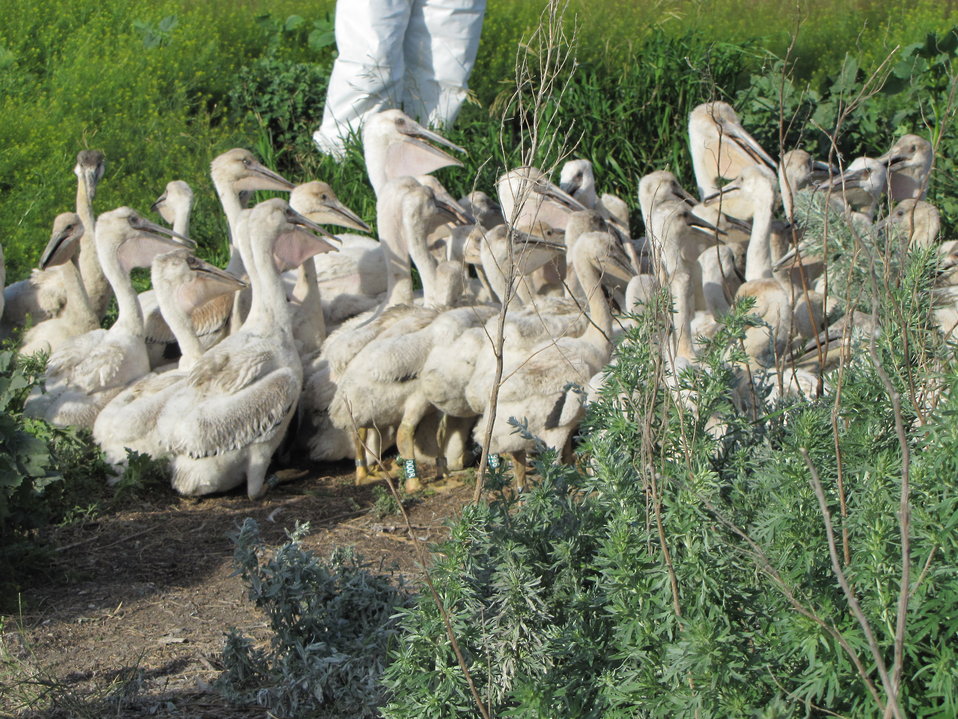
Group of young pelicans

Young pelican group together in pods or creches on Chase Lake National Wildlife Refuge in North Dakota.